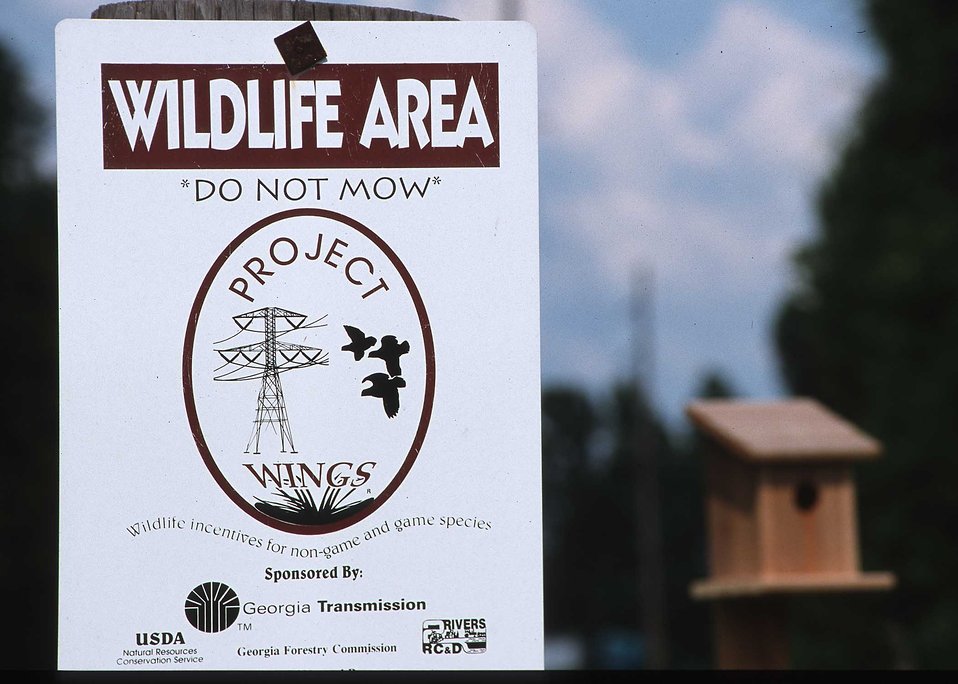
W.I.N.G.S. (Wildlife Incentives for Non-game and Game Species) is a private conservation grant program funded by the Georgia Power Company and administered by Two Rivers RC&D Council.